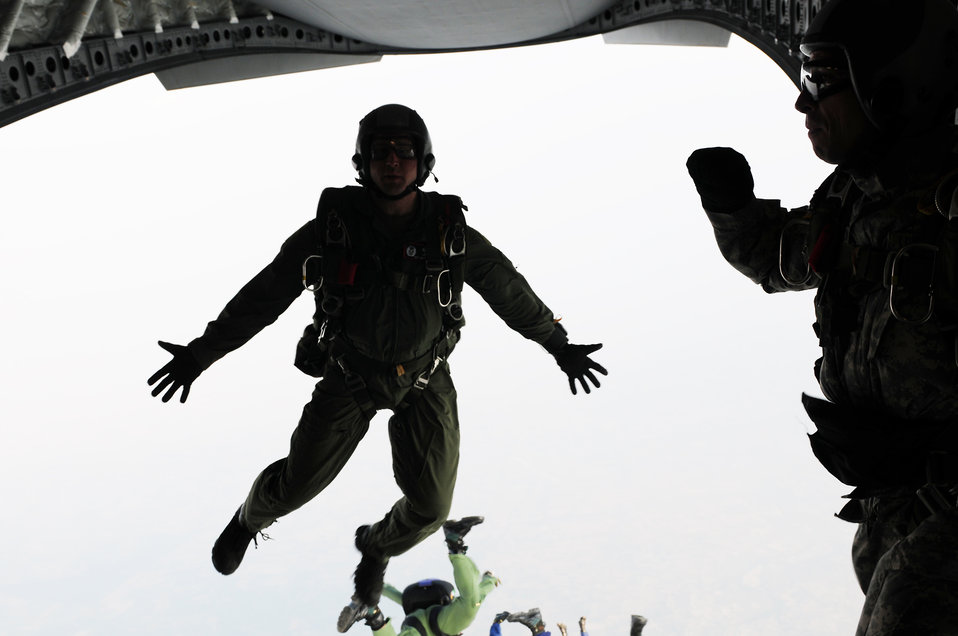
Globemaster conducts first mission for Cope India

An Airmen assigned to the 353rd Combat Training Squadron jumps out of a C-17 Globemaster III during the first ever combined high-altitude low-opening mission with the United States and Indian air forces at Air Force Station Agra, India, )ct. 19, 2009. More than 150 U.S. Air Force and Army personnel are deployed to India for Cope India, a humanitarian assistance disaster relief exercise.